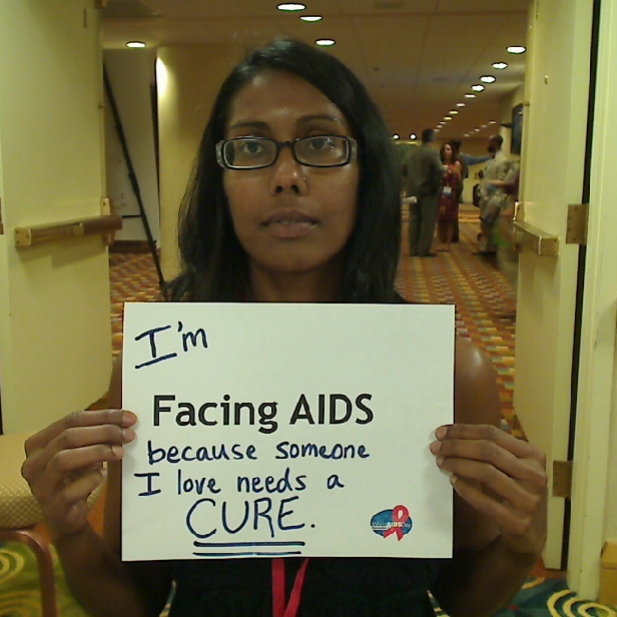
I'm Facing AIDS because someone I love needs a CURE.